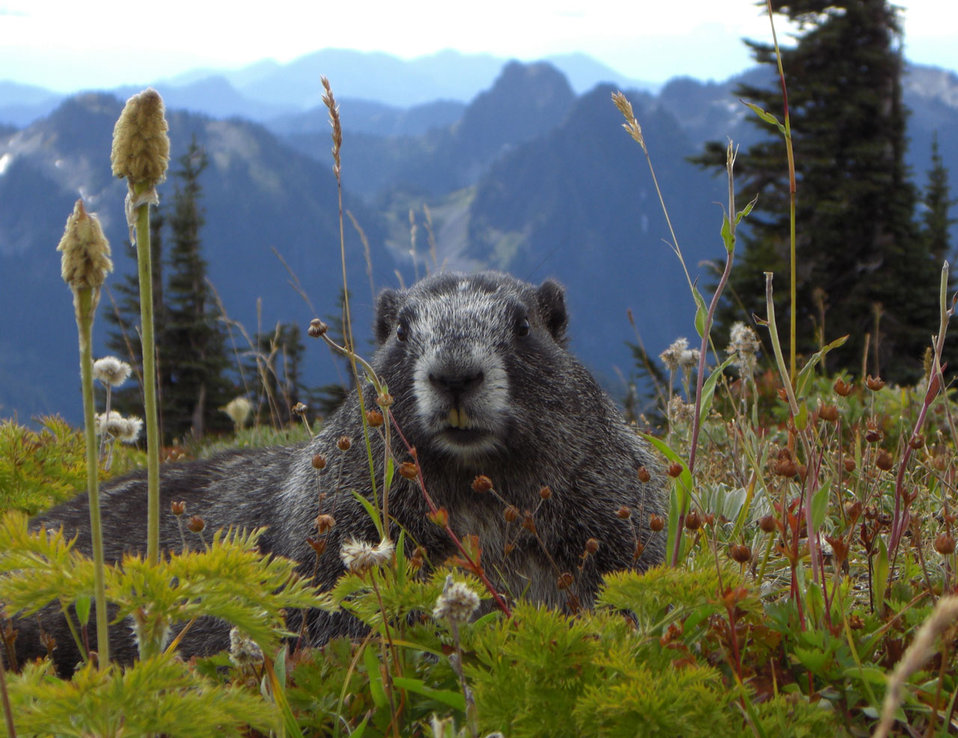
Marmot in paradise

A marmot in paradise in mount rainier national park..